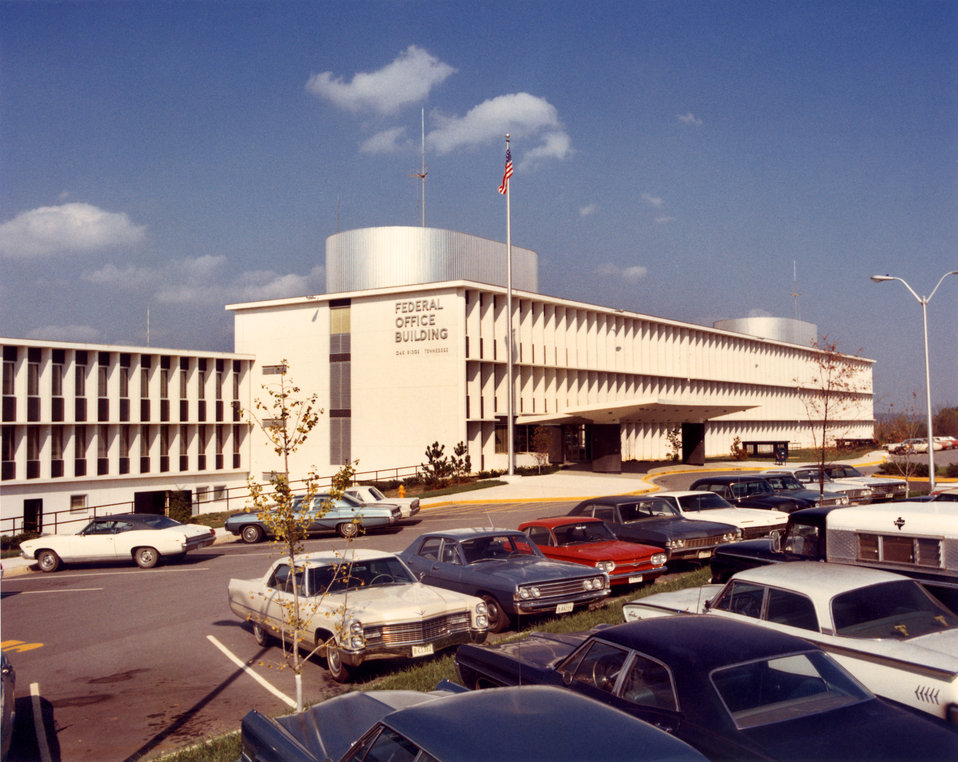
Oak Ridge Federal Office Building Oak Ridge

71-254-1c DOE photo by Frank Hoffman Oak Ridge Federal Office Building Oak Ridge Tennessee 10-28-1971